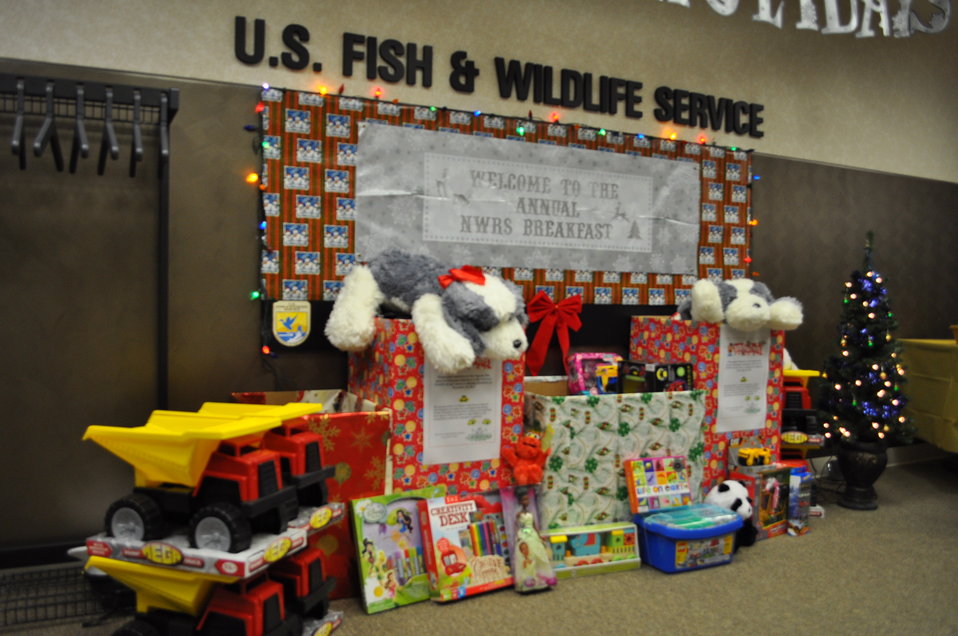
Look at all those toys!